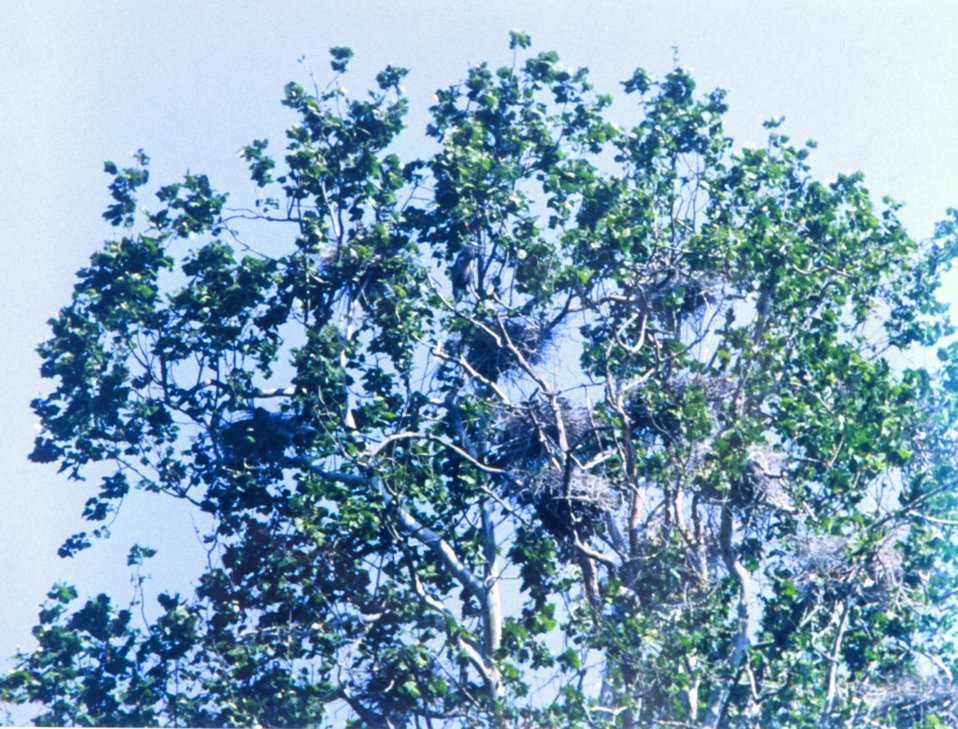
Great Blue Heron nesting area, or as it is called, a heronry.